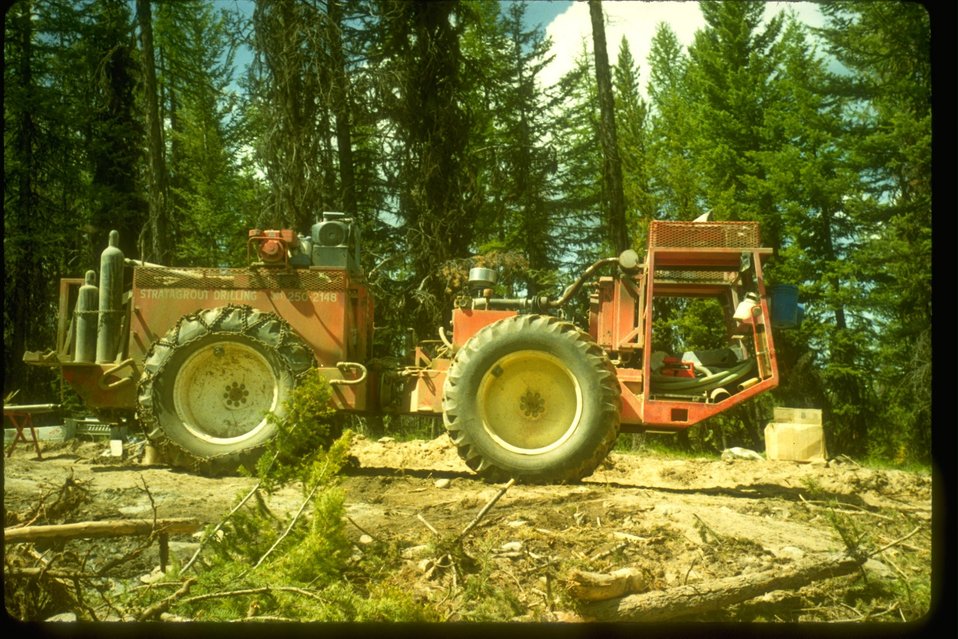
Cantera support rig used for exploration drilling at Crown Jewel Project, Okanogan County, Washington.